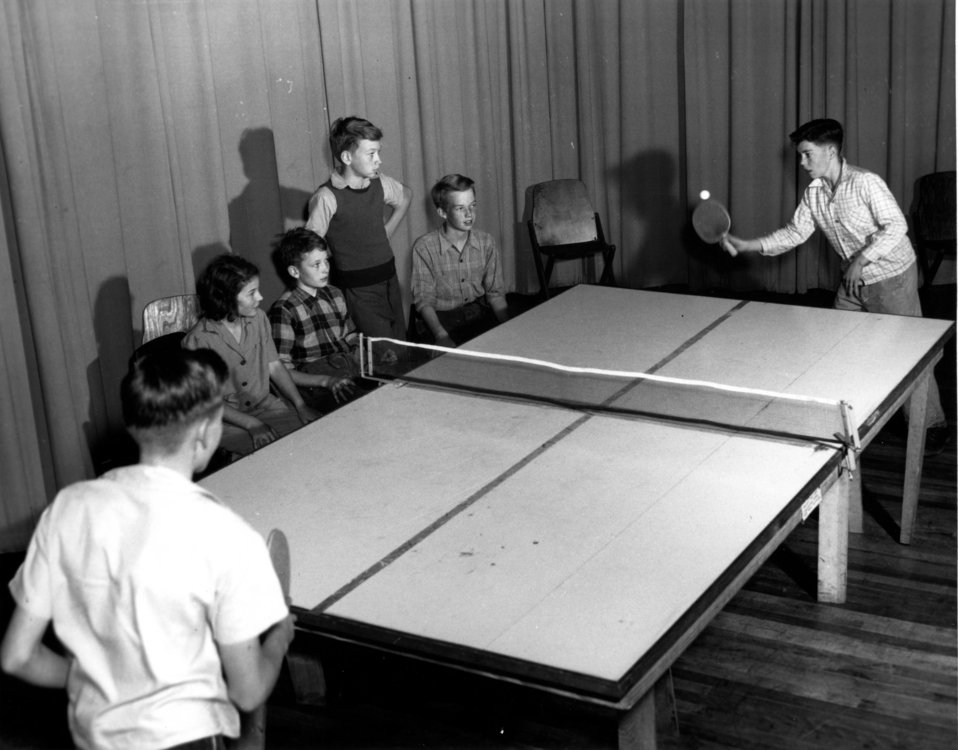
Recreation at Oak Ridge